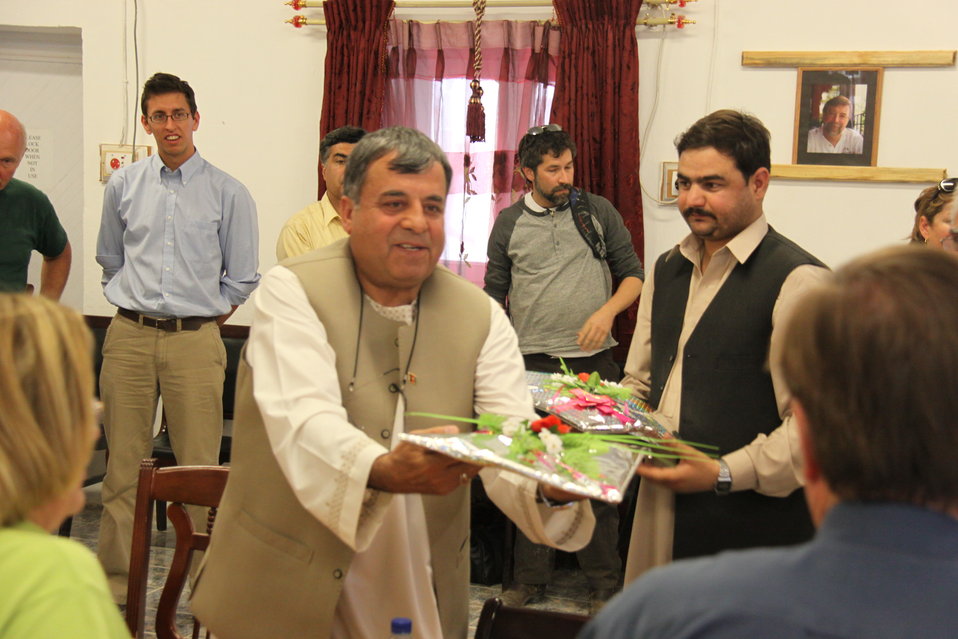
Meeting with Local Leaders in Kandahar